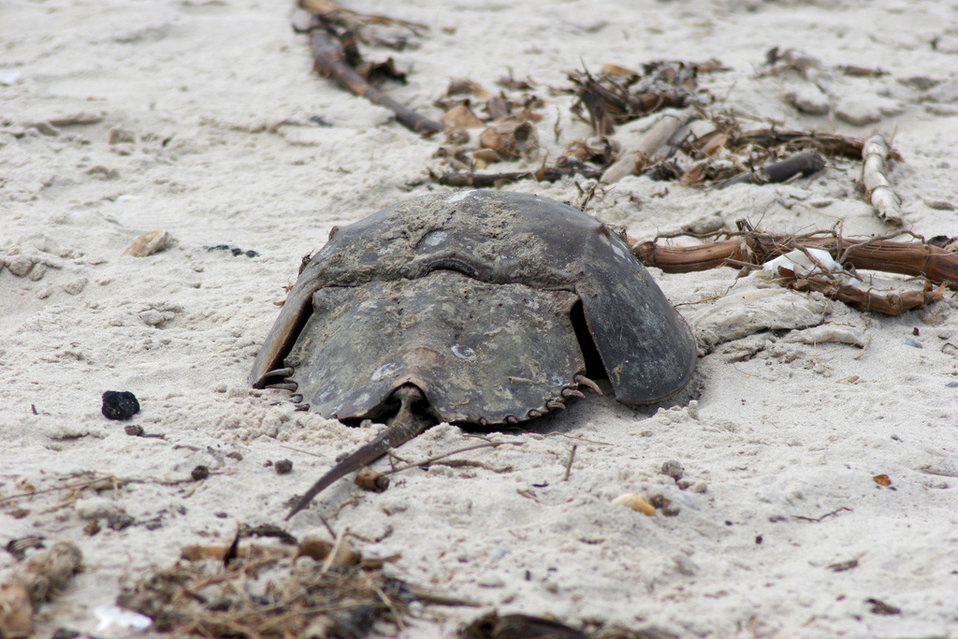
Photo of the Week - Horseshoe Crab (DE)

Photo of the week 10-15-12

Horseshoe crab photographed at Prime Hook National Wildlife Refuge.